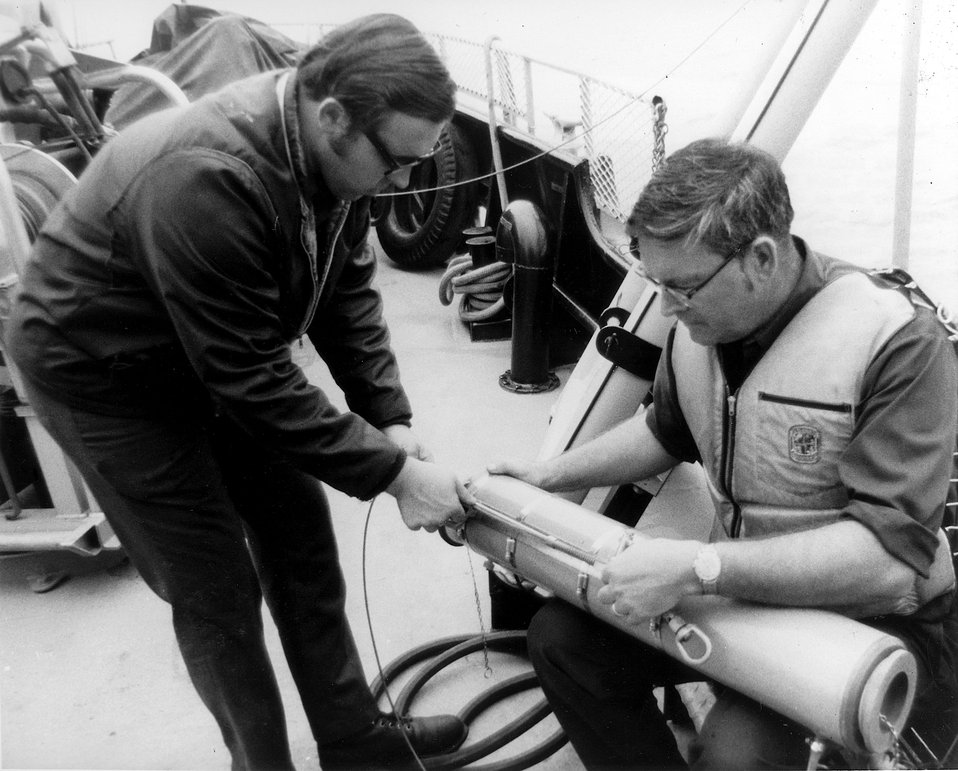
Researchers from the Center for Great Lakes Studies prepares a Van Dorn water sampler for an experimental run.
c.1972